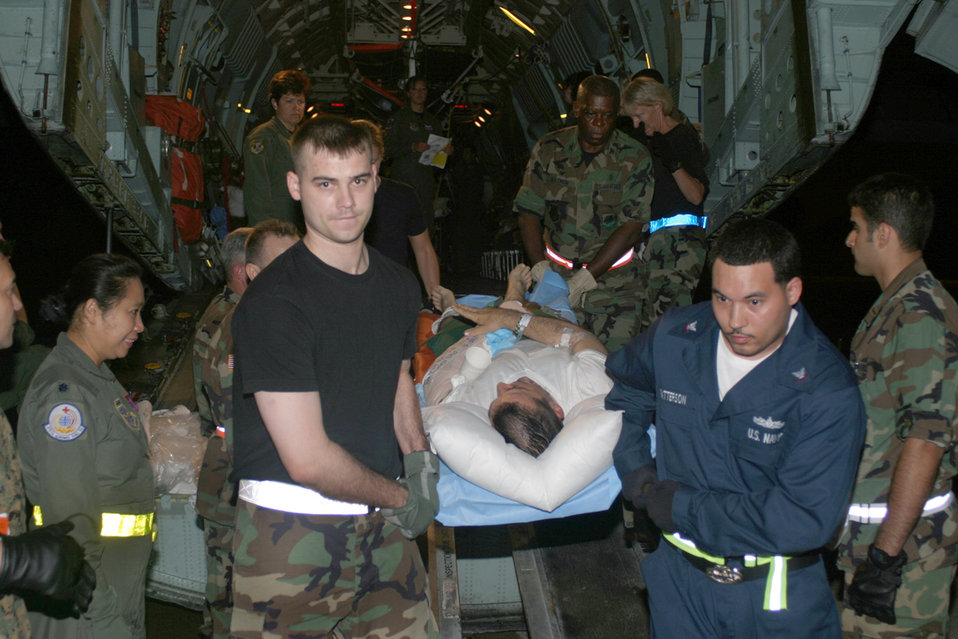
Team effort brings America's wounded troops home

ANDREWS AIR FORCE BASE, Md. -- Senior Airman Gilbert Hildebrand (left) helps move a patient from an Air Force Reserve Command C-141 Starlifter after a flight from Ramstein Air Base, Germany. Airman Hildebrand is from the 445th Aeromedical Evacuation Squadron at Wright-Patterson Air Force Base, Ohio.